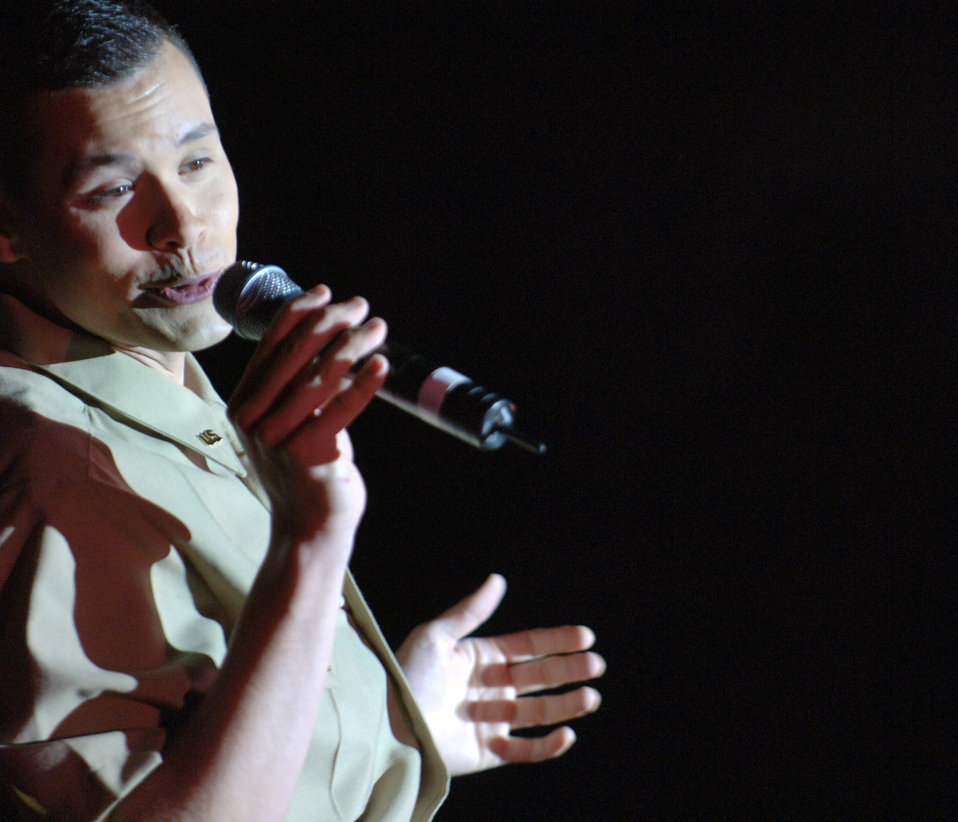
Tops In Blue put on a show for Airmen, Soldiers at Balad

Staff Sgt. Daniel Rutherford croons before servicemembers during a Tops In Blue performance April 28 at Balad Air Base, Iraq. Thirty eight active-duty Airmen with the Air Force's premier expeditionary entertainers set out in mid-April to kick off their 2007 tour singing and dancing their way through the area of responsibility. They will tour Southwest Asia for three weeks, and continue their 2007 tour through February 2008. Sergeant Rutherford is a cryptologic linguist with the 22nd Intelligence Squadron at Fort Meade, Md.